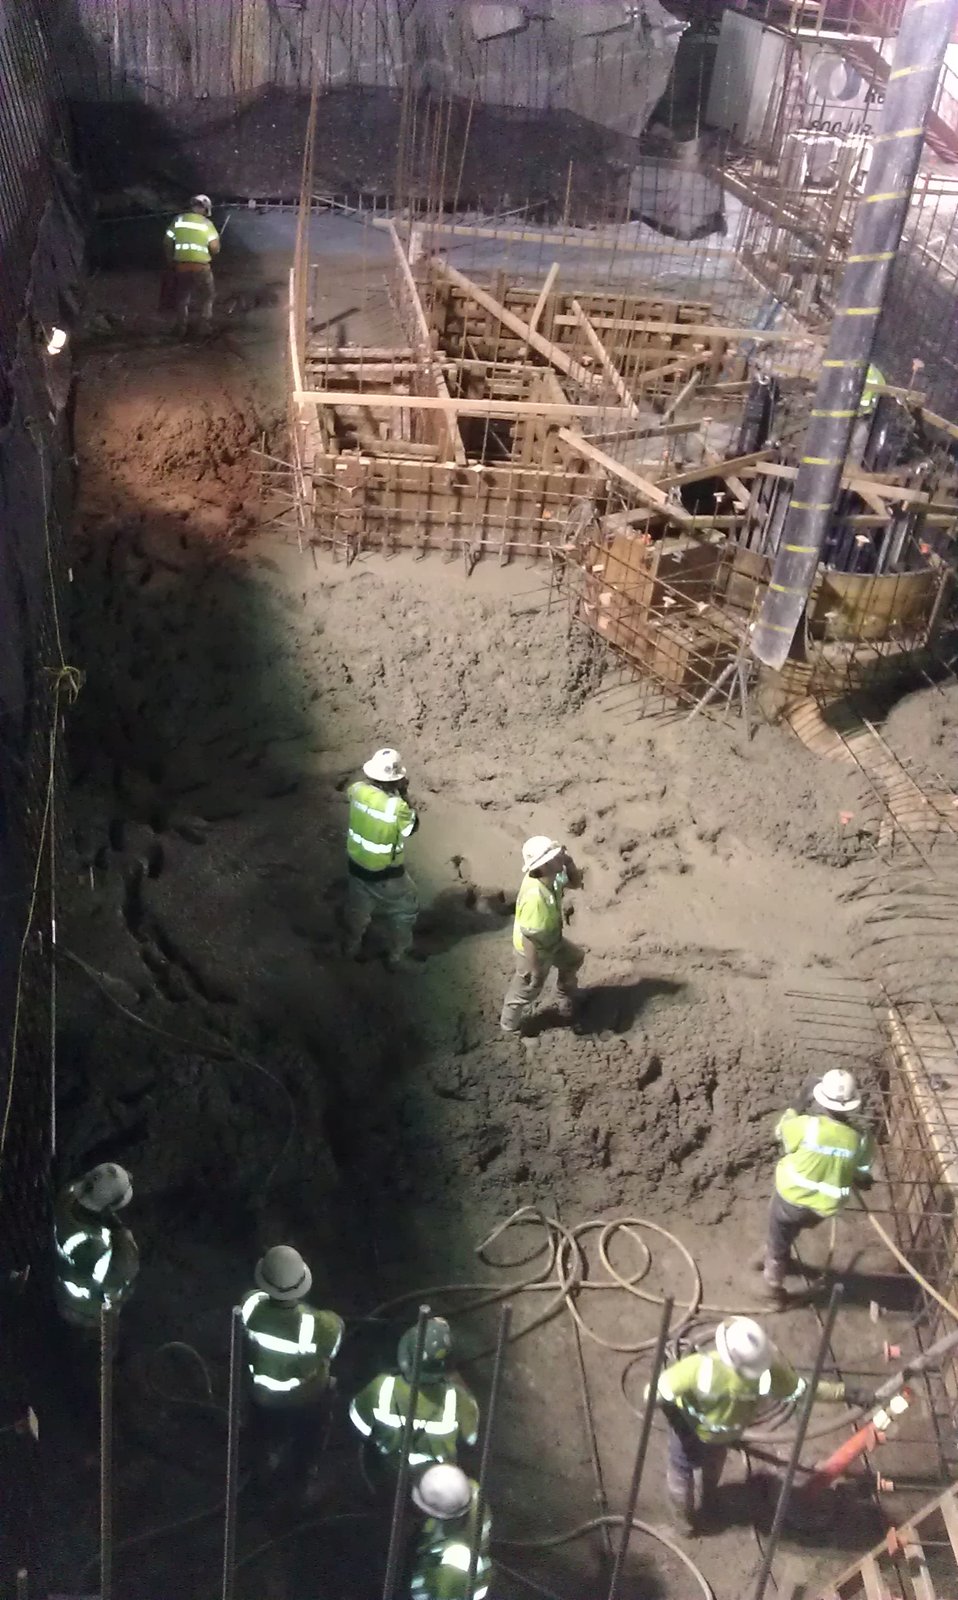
Nighttime concrete placement at Folsom spillway

The U.S. Army Corps of Engineers Sacramento District works at night during concrete placement for the auxiliary spillway at the Folsom Dam Joint Federal Project in Folsom, Calif., June through August 2012. The work is being done at night when temperatures are lowest, aiding the concrete’s cure. The district is building the auxiliary spillway in cooperation with the U.S. Bureau of Reclamation, the state’s Central Valley Flood Protection Board and the Sacramento Area Flood Control Agency to improve the safety of the existing Folsom Dam in Folsom, Calif., and reduce flood risk for the greater Sacramento area. (U.S. Army courtesy photo/Released)